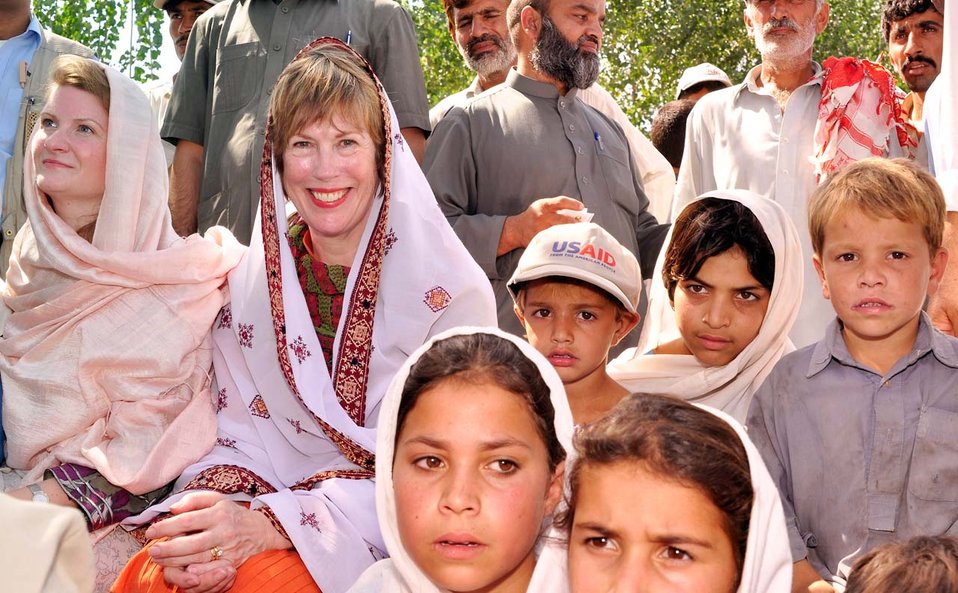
Dr. Marilyn Wyatt's Visit to the Flood-affected Farming Communities in Khyber Pakhtunkhwa